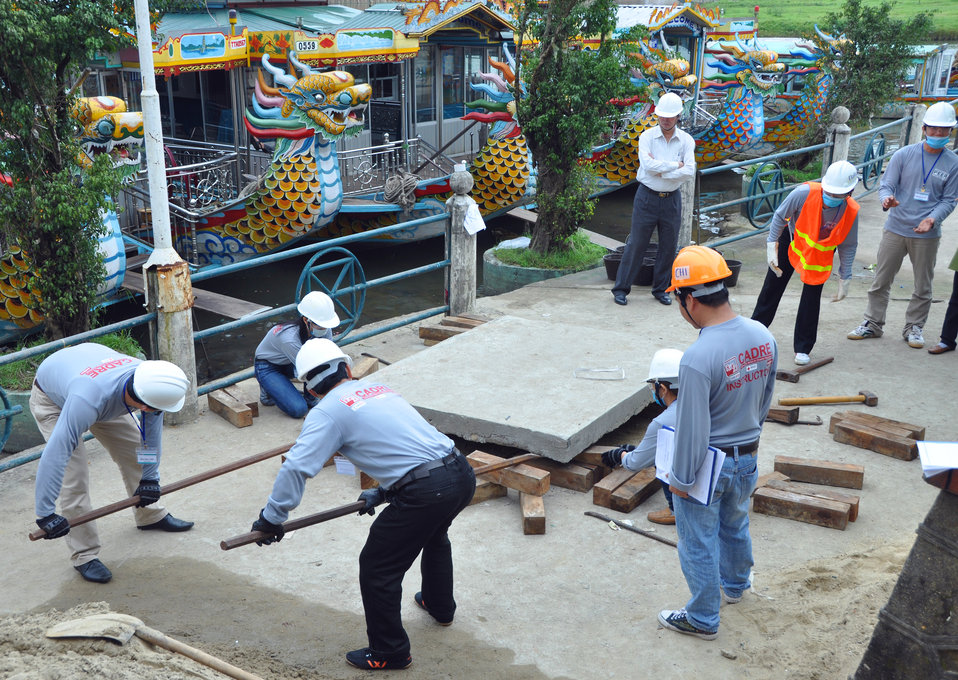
Disaster and Emergency Training Funded by USAID in Hue, Vietnam